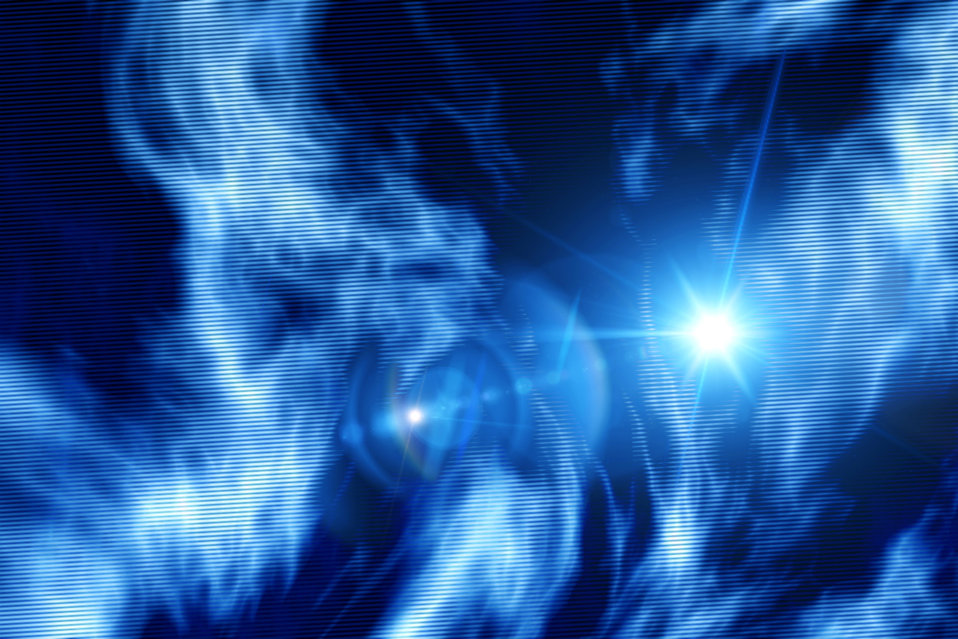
Abstraction

Celestial abstraction with light flash.